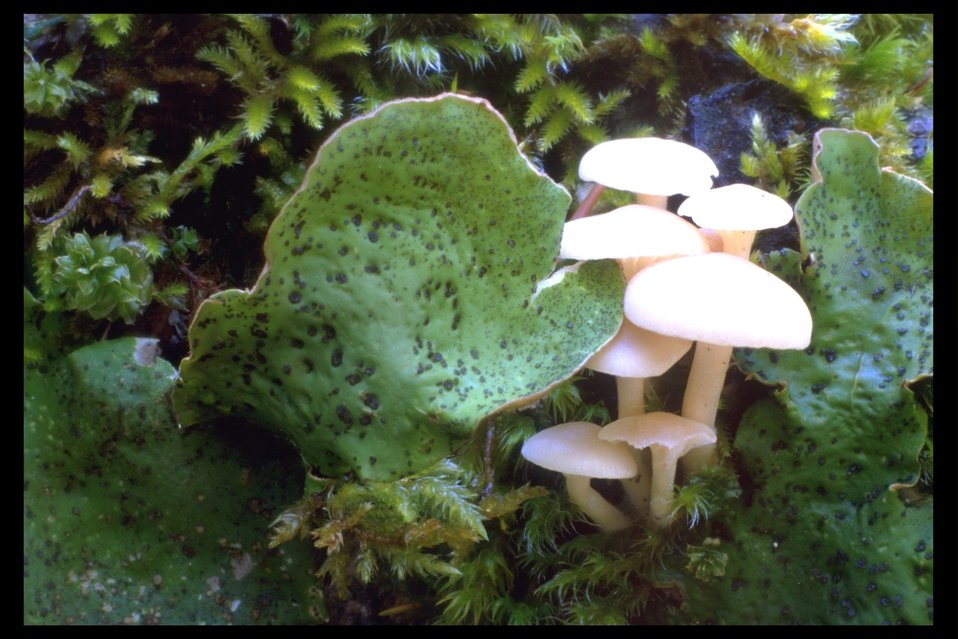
Mushrooms and moss along the Rogue River Trail near Prospect, OR.